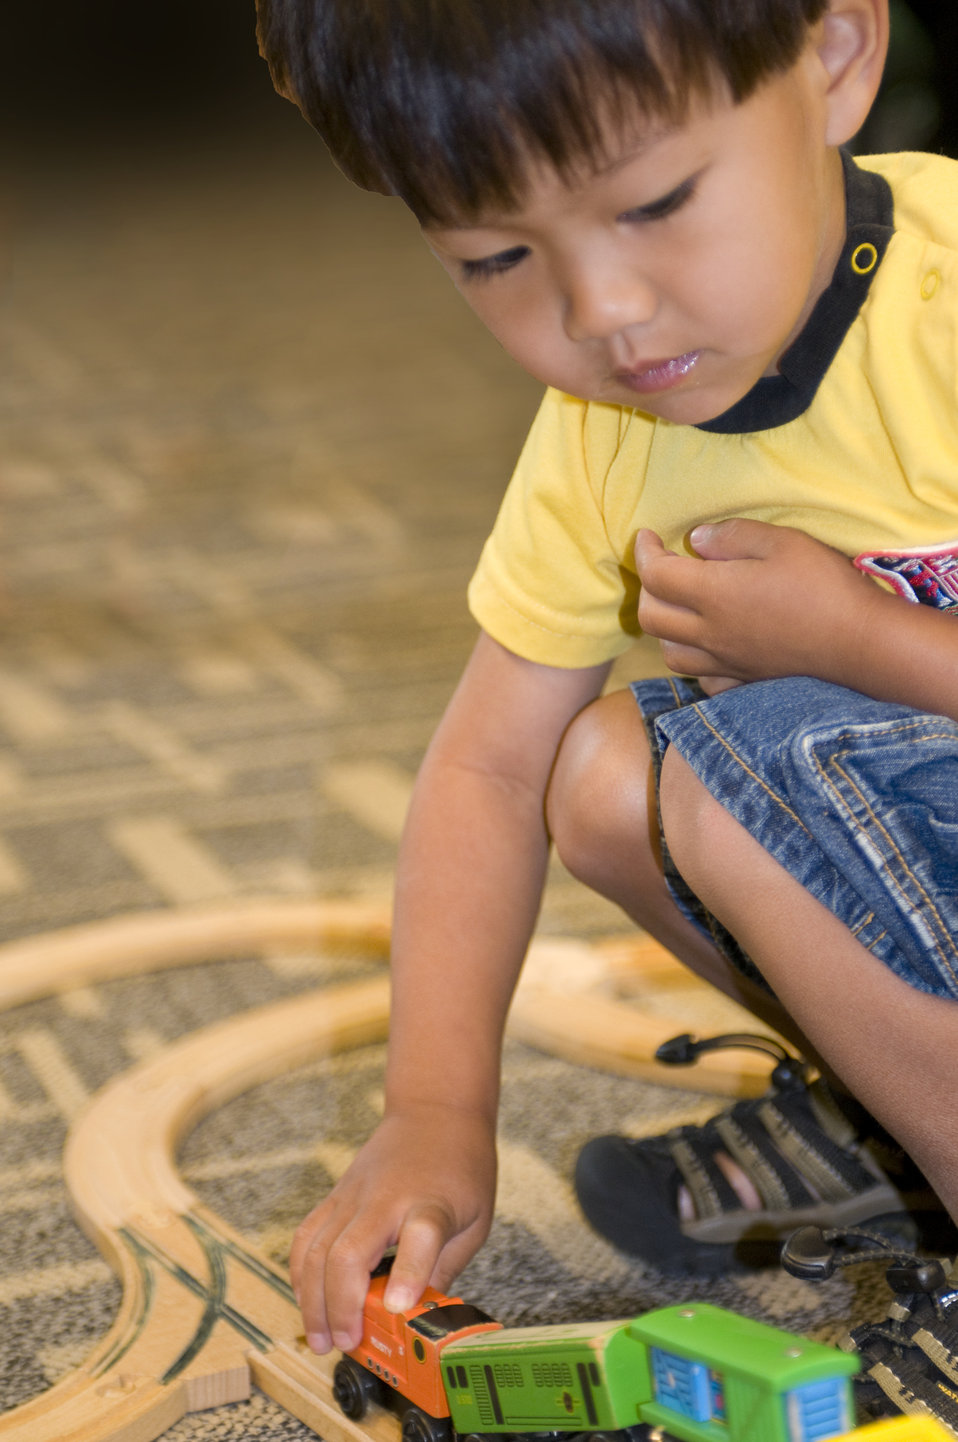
While in a daycare setting, this young boy was playing with a small wooden train set, pushing the little train cars along the grooved wooden track.